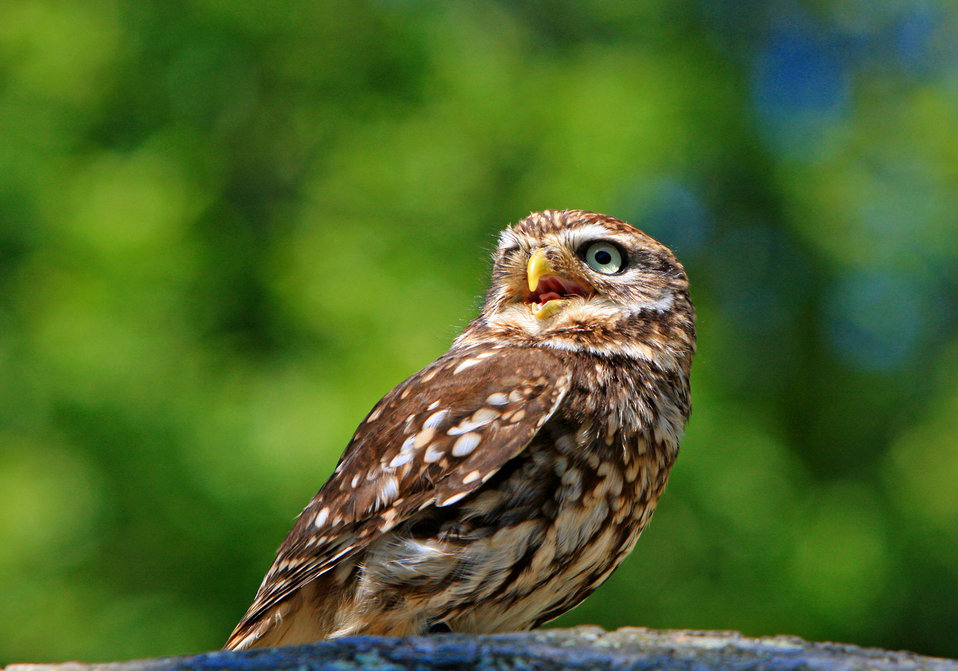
Owl portrait

Beautiful beautiful of a little owl with his beak open.